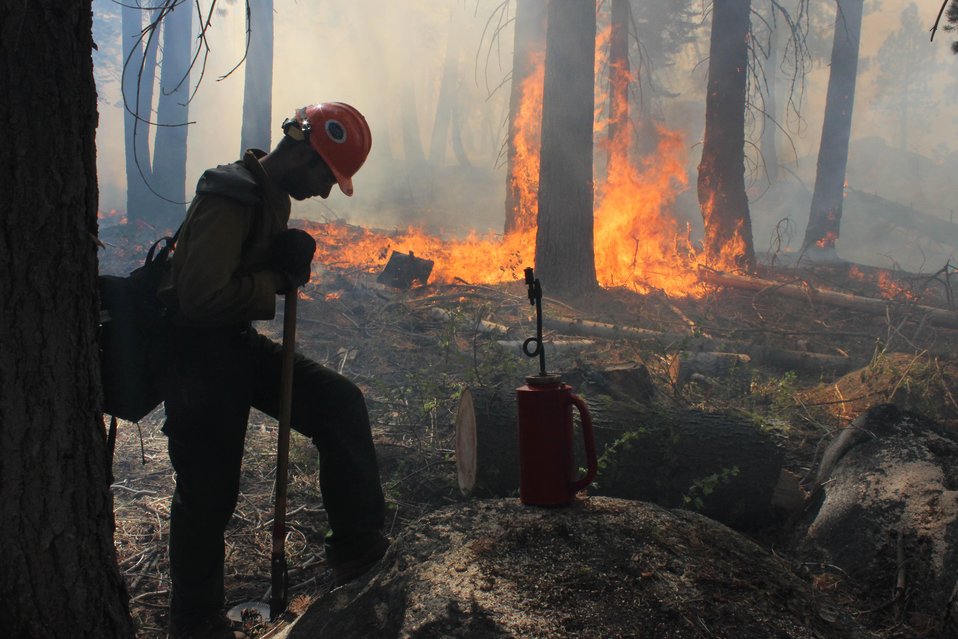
Horseshoe Meadows Hotshot takes a short breather at the Rim Fire. The Rim Fire in the Stanislaus National Forest near in California began on Aug. 17, 2013 and is under investigation. The fire has consumed approximately 237,341 acres and is 80% contained.